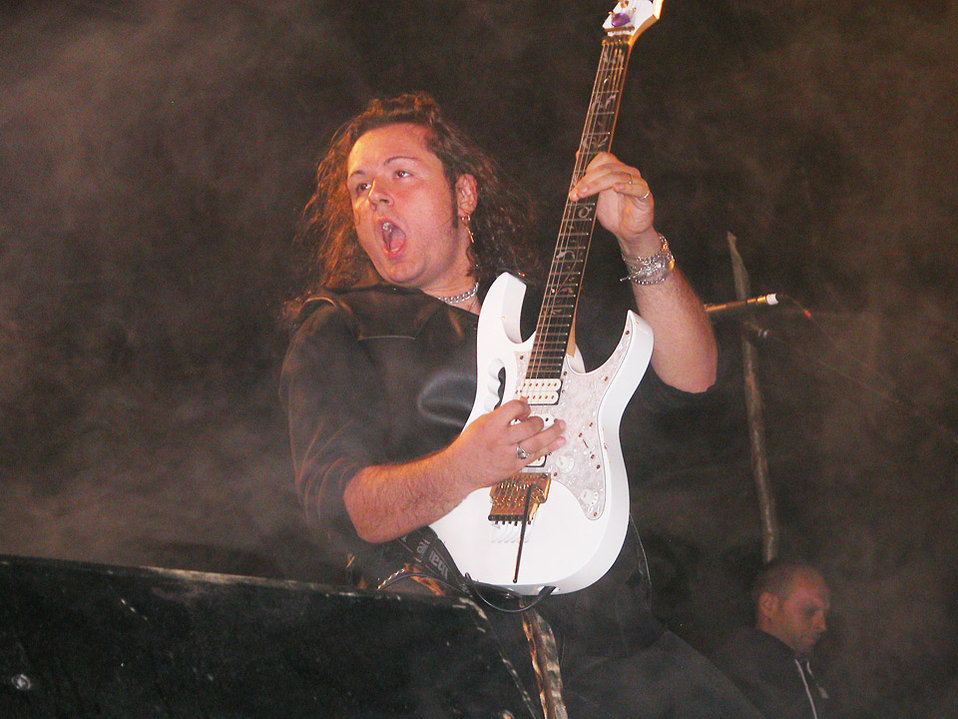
Italiano: Danilo Bar in concerto al Festival annuale ceroanKio di Asti il 25 agosto 2007 Danilo Bar in concert to the annual Festival ceroanKio of Asti - August, 25 2007